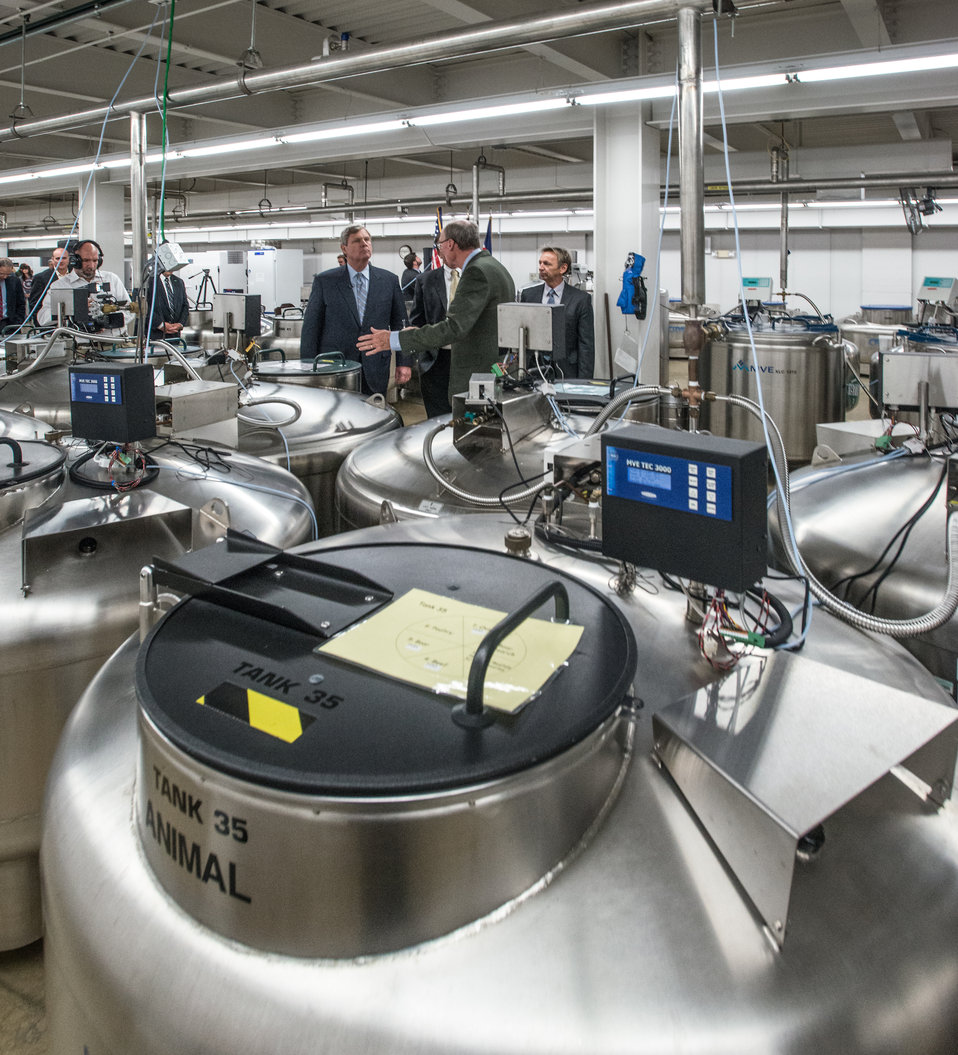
Agriculture Secretary Tom Vilsack tours the Cryogenic Storage Vault at the U.S. Department of Agriculture's (USDA) Agriculture Research Service (ARS) National Center for Genetic Resources Preservation (NCGRP) in Ft. Collins, CO on Wednesday, Nov. 6, 2013. The vault stores 45-50 cryogenic tanks hold animal germplasm, plant tissue culture, and seeds that are stored at -196 °C (-321 °F) in liquid storage or to -193 °C (-315 °F) in vapor storage. NCGRP is the largest agricultural gene bank facility in the U.S. The NCGRP staff conducts groundbreaking research to develop more efficient and effective means for preserving plant and animal germplasm, and for better understanding the genetic structure of these invaluable materials. The research findings, preservation techniques, and specialized technology developed by the NCGRP have been adopted by gene banks around the world: many international scientists travel to the NCGRP for research and training.